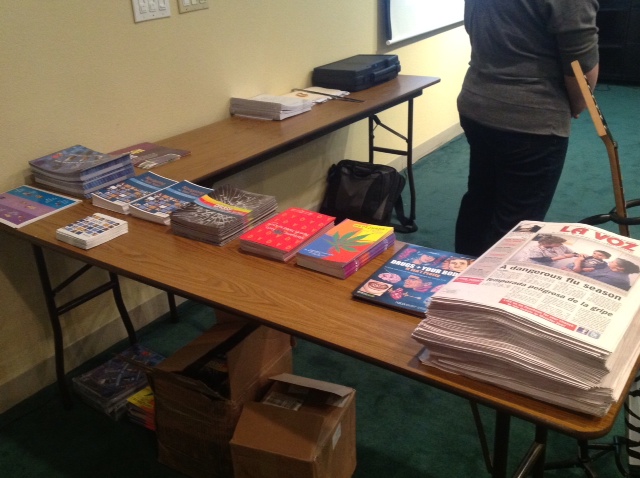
HIKE's National Drug Facts Week 2013

Lakewood, Co. Shatter The Myths Even Materialst- February 2, 2013. Photos provided by Justine Hurtado